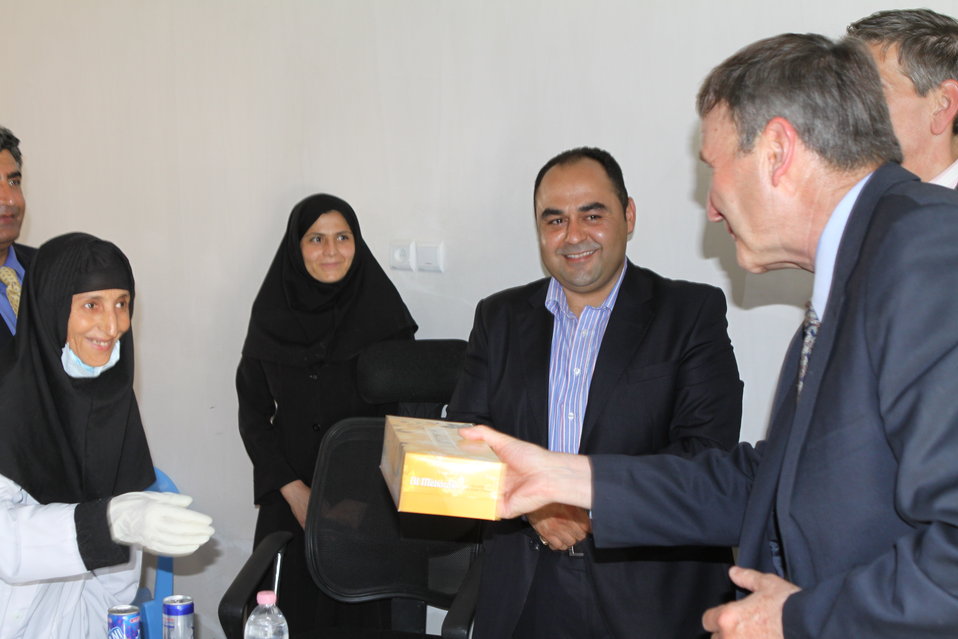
100525 Hirat Marble Conference 857